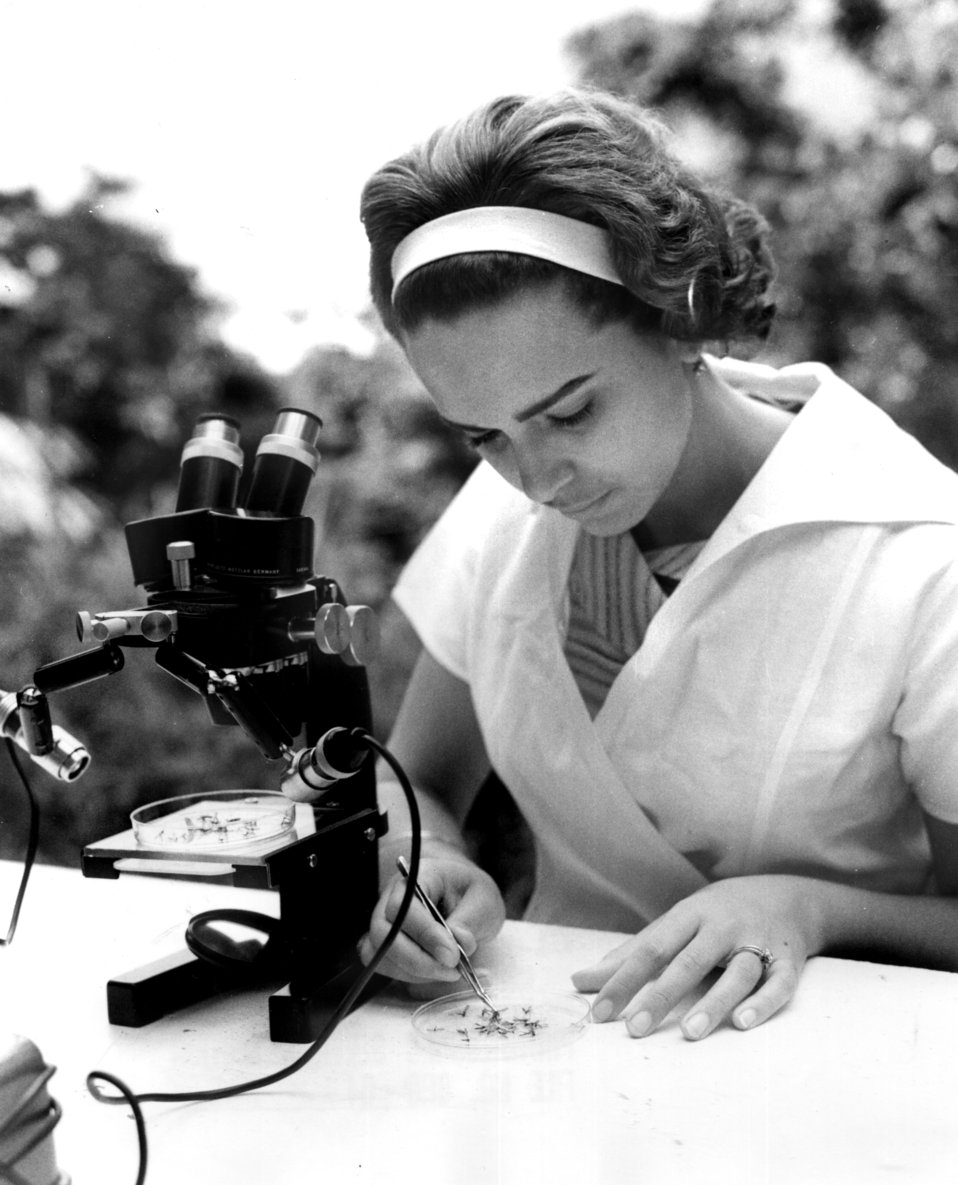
Counting Mosquitos Rain Forest

64-787 DOE photo Ed Westcott Radiobiology Div. Rain Forest 2-16-1964